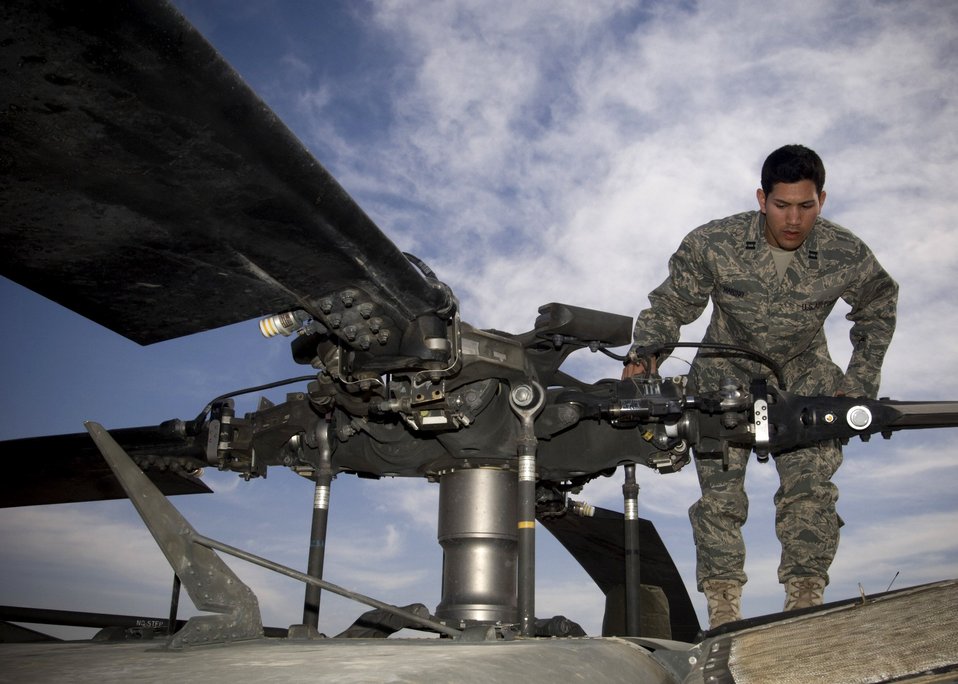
Solving a battle damage scenario

Capt. Francis Marino, a joint combat assessment team member at Balad Air Base, Iraq, inspects the rotor of an Army MH-60 Black Hawk helicopter he is using as a standard to gather information on battle damage that occurred to another MH-60 from enemy fire.